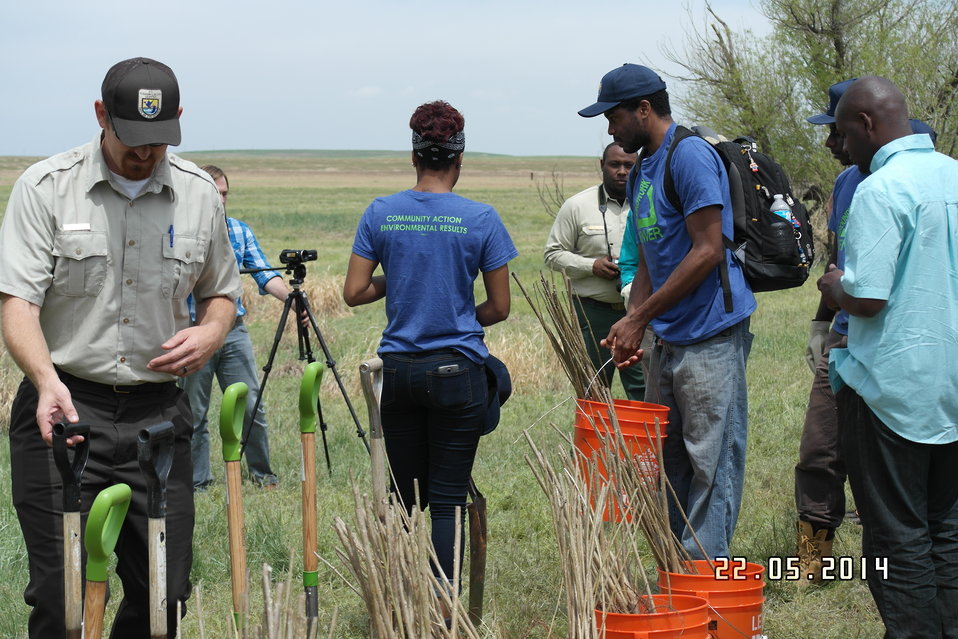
Secretary Jewell Announces $6.7 for Youth Conservation Job

Jewell made the announcement at an event at Rocky Mountain Arsenal National Wildlife Refuge outside Denver, Colorado, where she was joined by U.S. Department of Agriculture (USDA) Deputy Under Secretary for Natural Resources and the Environment Arthur “Butch” Blazer; Greg Knadle, Vice President for Government Relations of the National Fish and Wildlife Foundation (NFWF); Refuge Manager David Lucas and youth corps members of Groundwork Denver.